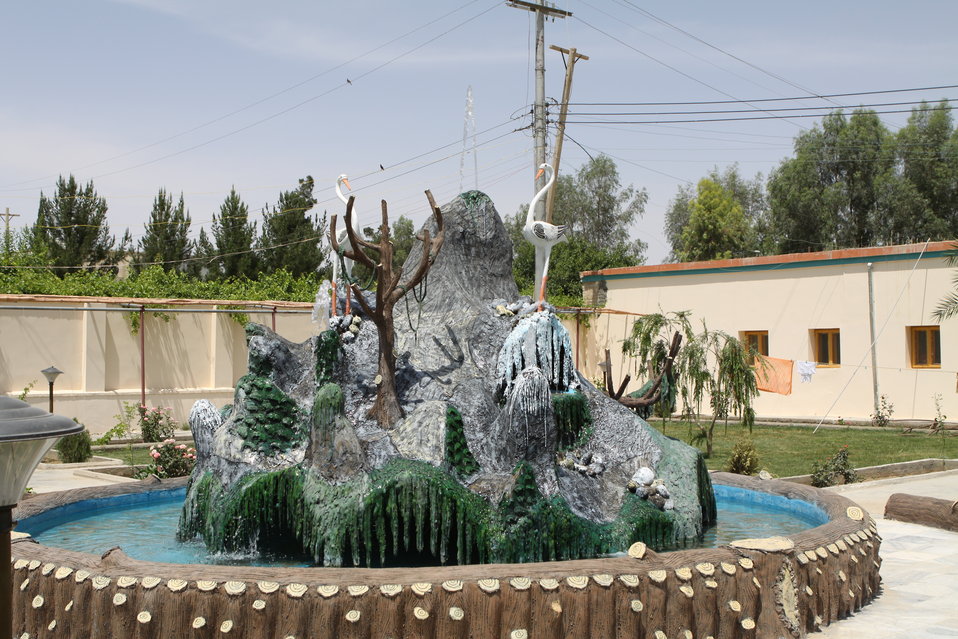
Bolan Poultry Farm